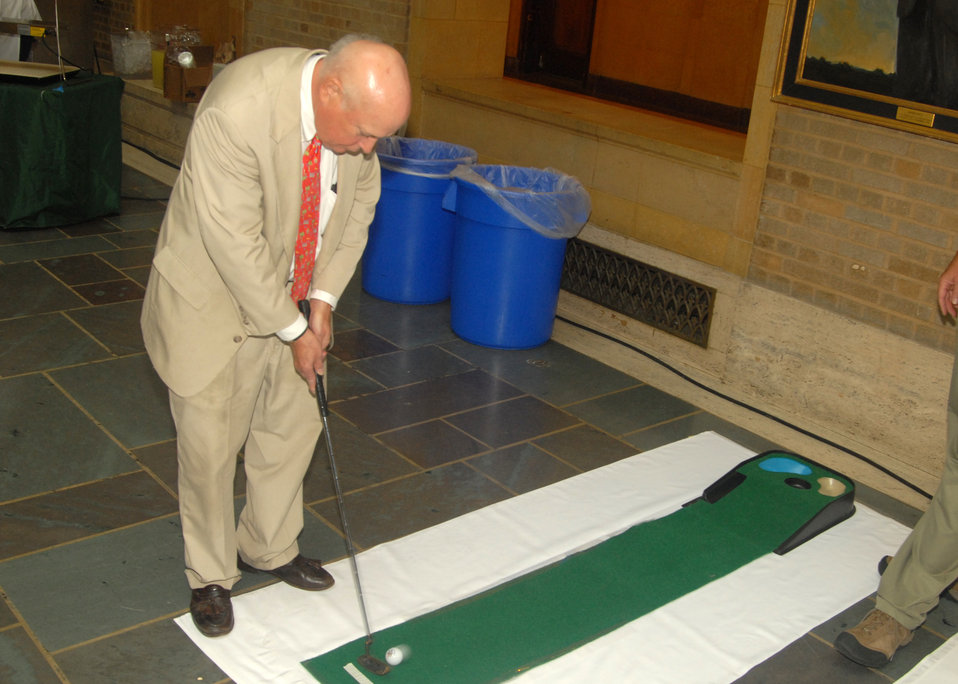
A U.S. Department of Agriculture (USDA) employee participates in one of the many activities at the U.S. Department of Agriculture’s (USDA) opening ceremony for the 2012 Combined Federal Campaign on Tuesday, Sept. 18, 2012 at the USDA Whitten Building, in Washington, D.C. USDA has set a goal of raising just under $2 million from their employees in the national capital area. The theme for this year’s CFC campaign is “Choose Hope”.